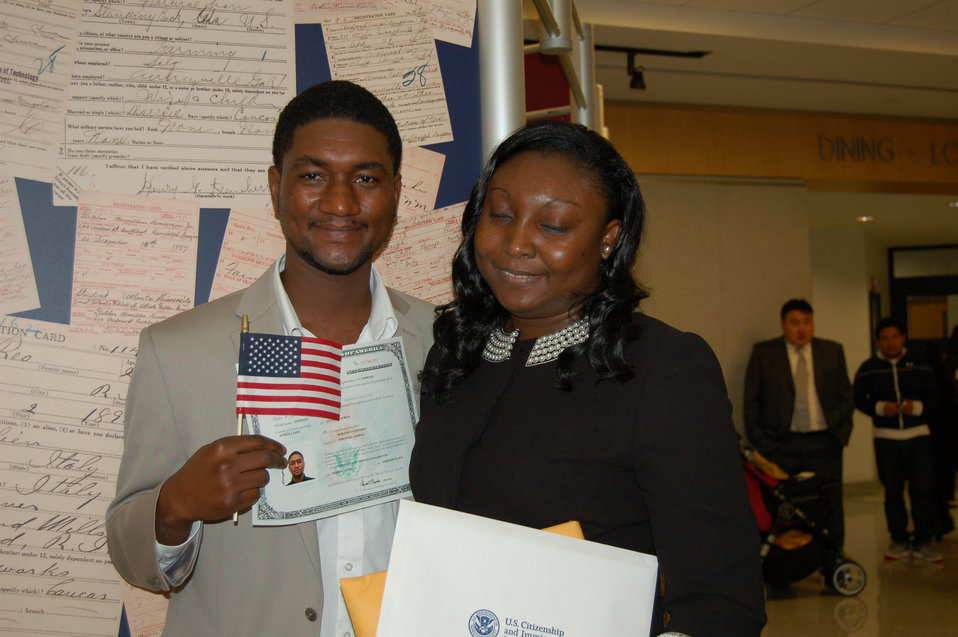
New Citizens